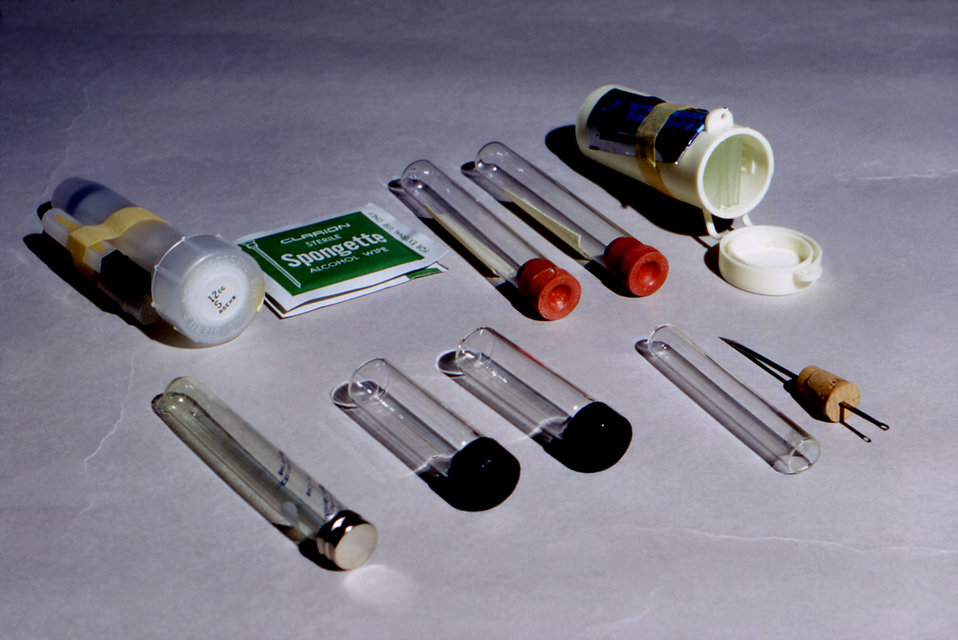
This 1966 image depicts the contents of a collecting kit used in the field when collecting specimens from patients with vesicle-producing ailments, who were suspected of being infected with smallpox.